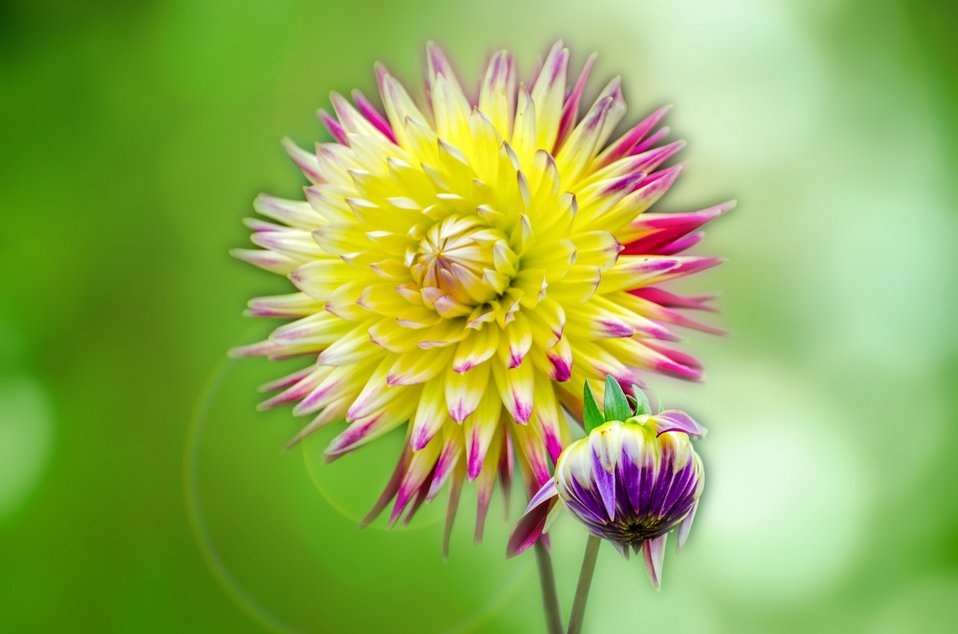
Flower on the green background.